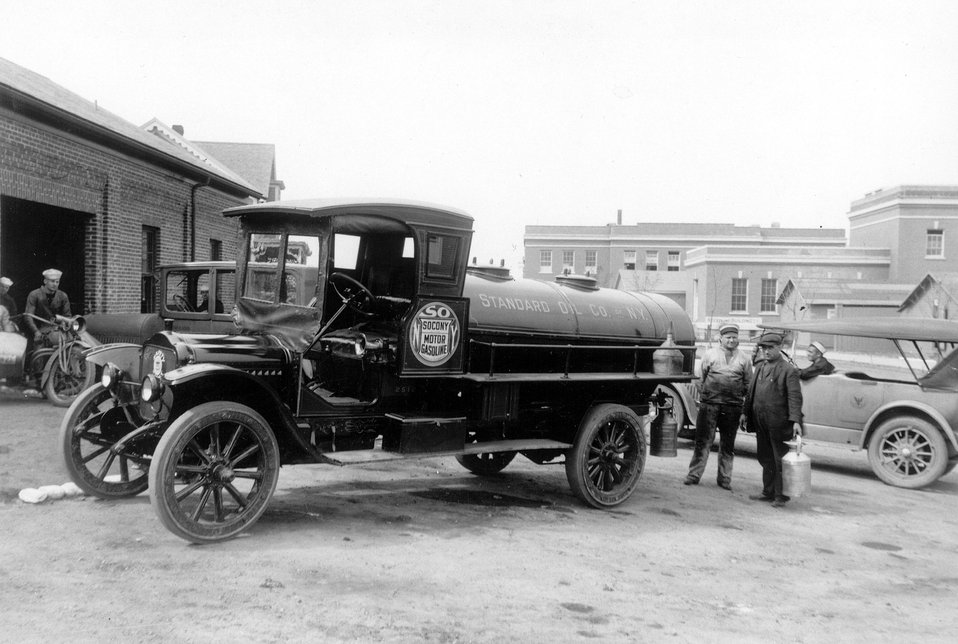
Auto Tank Truck making delivery of gasoline to US Naval training station Newport, RI.